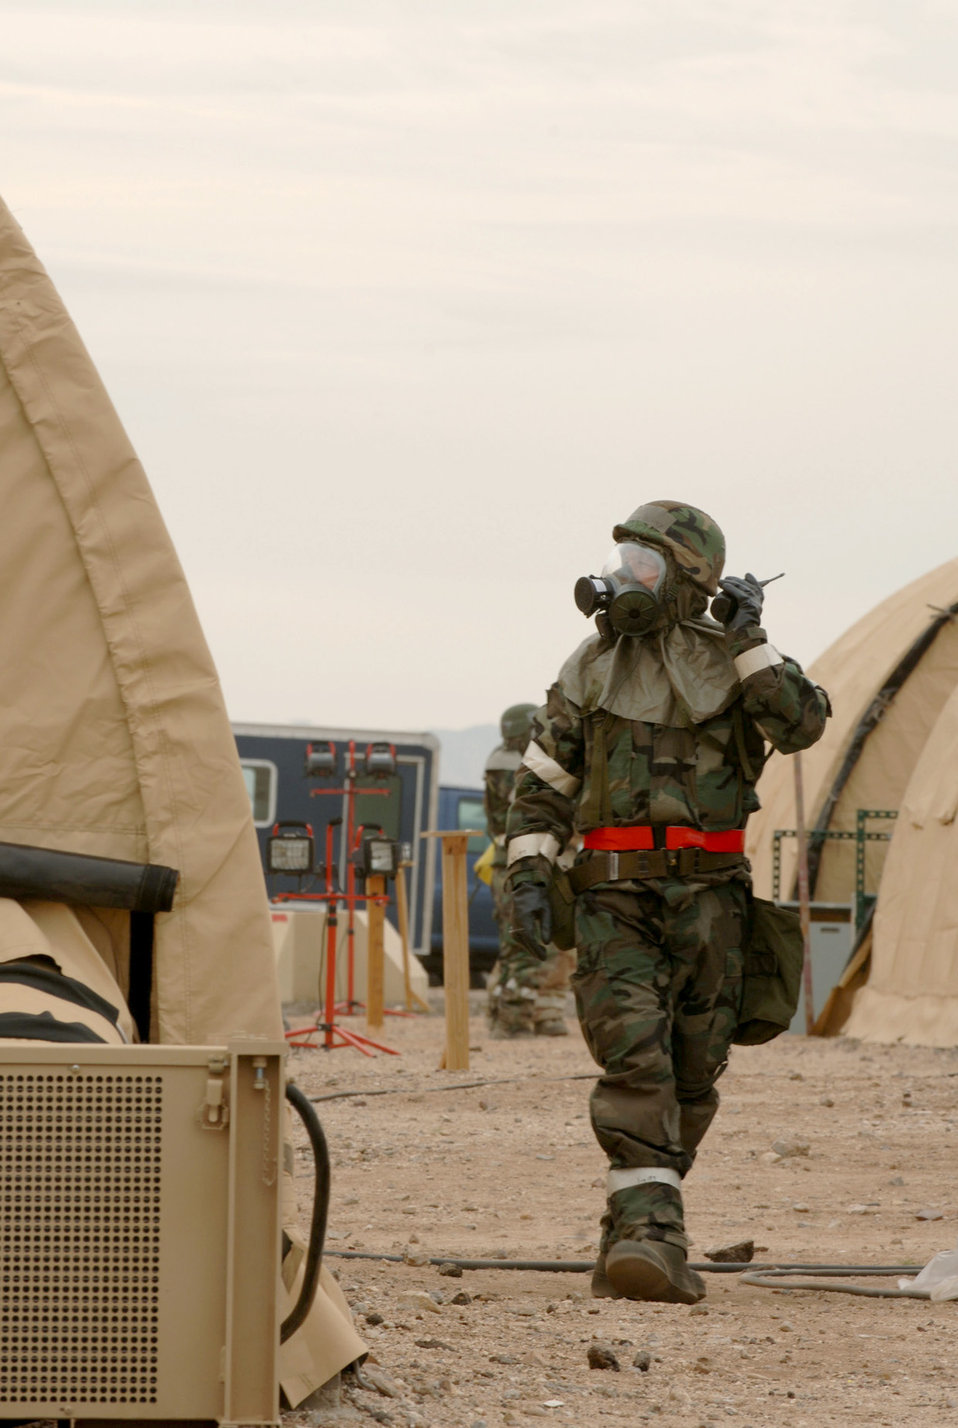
Preparing to deploy

Tech. Sgt. Mark McKay checks the roof of a shelter during an exercise, in a simulated deployed location on Tuesday, April 4, 2006.